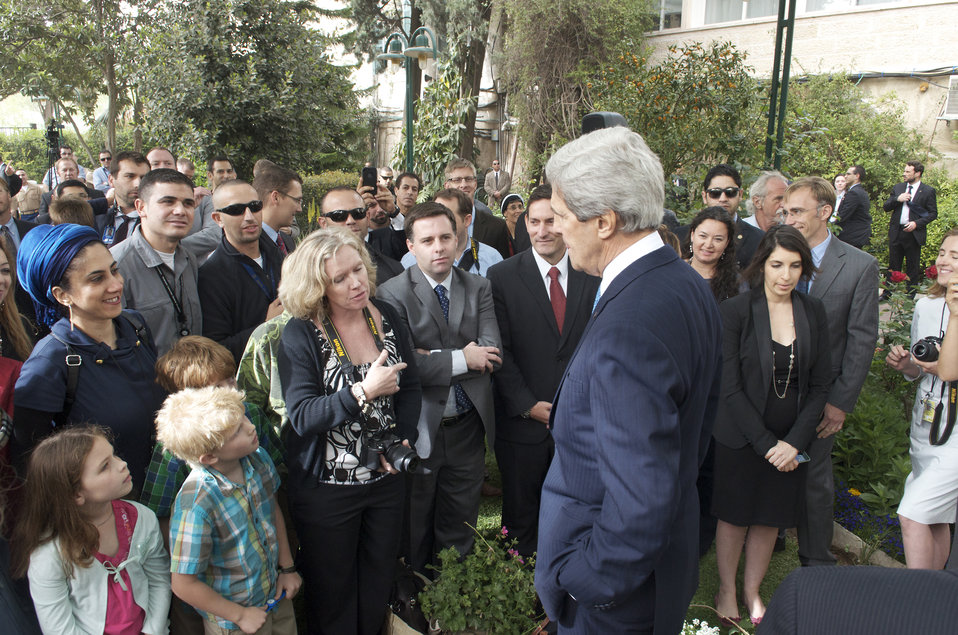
Secretary Kerry Speaks With the Staff of Consulate General Jerusalem

U.S. Secretary of State John Kerry meets with staff and families at the U.S. Consulate General in Jerusalem on April 8, 2013.